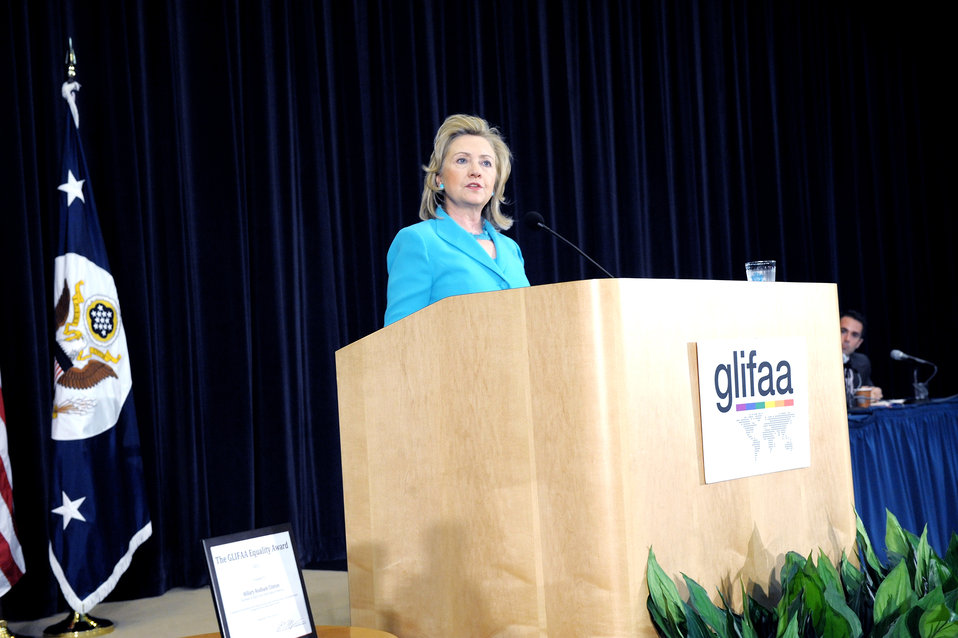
Secretary Clinton Delivers Remarks at GLIFFA LGBT Pride Month Celebration

U.S. Secretary of State Hillary Rodham Clinton delivers remarks on “The Human Rights of LGBT People and U.S. Foreign Policy,” at an event co-hosted by the State Department and Gays and Lesbians in Foreign Affairs Agencies (GLIFAA), at the U.S. Department of State in Washington, D.C., on June 27, 2011. The event is part of a series of LGBT Pride Month celebrations at the U.S. Department of State.